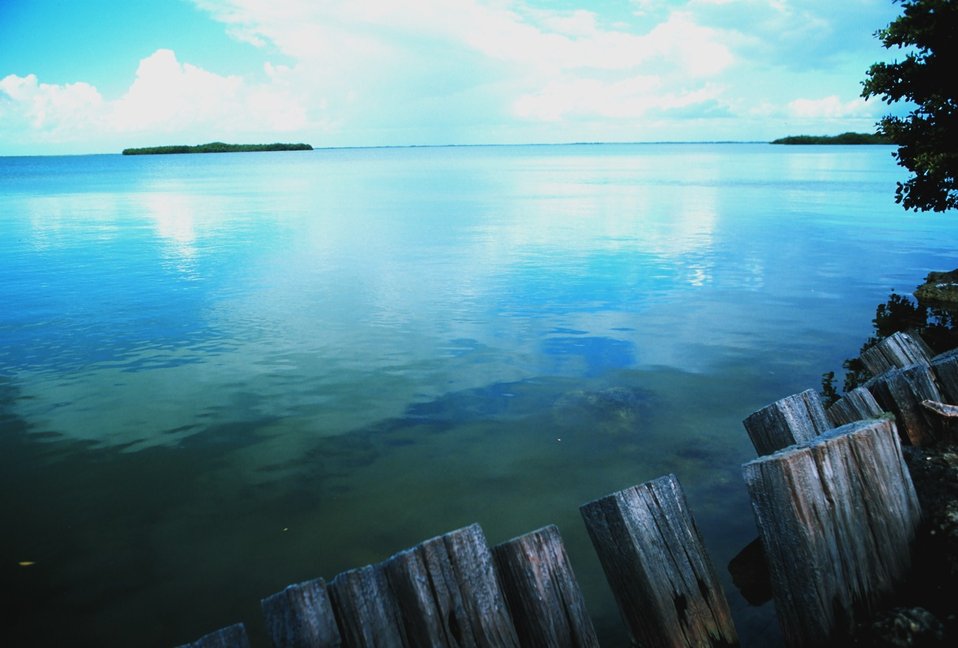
Reflections off Florida Bay, looking east from Route 1, south of Key Largo